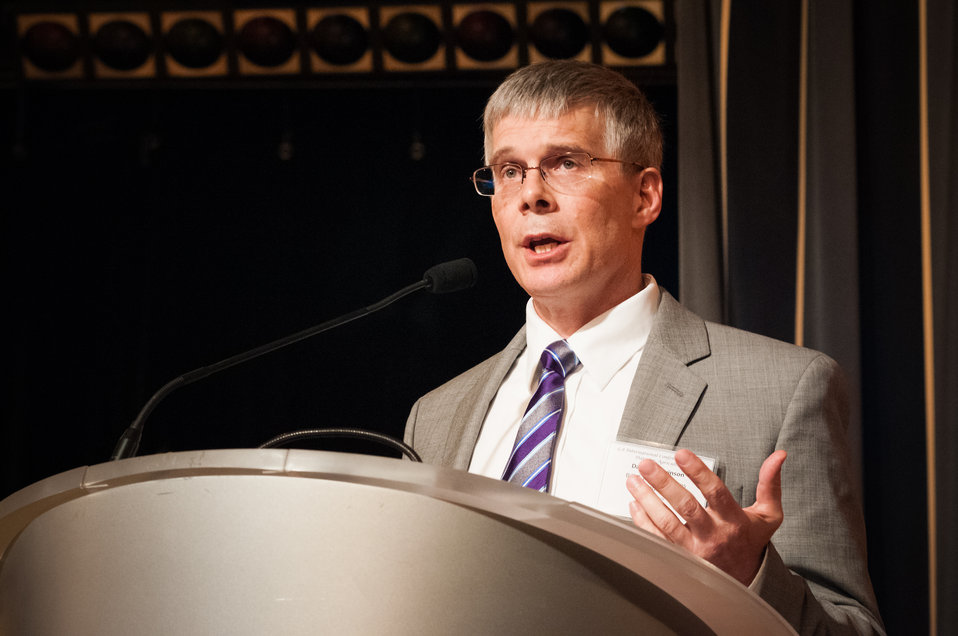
Bill and Melinda Gates Foundation Digital Design for Agriculture Deputy Director David Bergvinson discussed, “Open data: Challenges for the Future-Leveraging Open Data to Accelerate the Development and Delivery of Farmer-Preferred Products and Services in Africa at the G-8 International Conference on Open Data for Agriculture in Washington, D.C.on Tuesday, Apr. 30, 2013. The conference launched a new 'virtual community' of Food, Agriculture, and Rural data on Data.gov-the U.S. Government's data sharing website-to catalogue America's publicly available agricultural data and increase the ability of the public to find, download, and use datasets that are generated and held by the Federal Government. The data community features a collection of more than 300 newly cataloged datasets, databases, and raw data sources related to food, agriculture, and rural issues from agencies across the U.S. Government. In addition to the data catalog, the virtual community shares a number of applications, maps and tools designed to help farmers, scientists and policymakers improve global food security and nutrition.